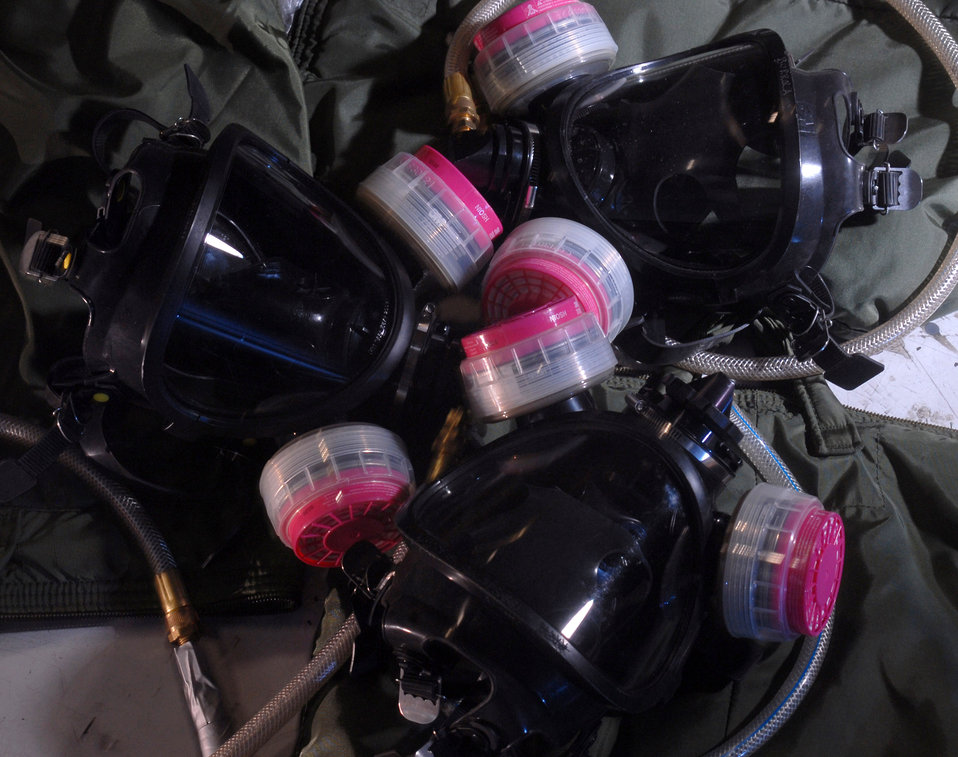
By the book

Full-face supplied air respirators are used by fuel cell technicians from the 452nd Maintenance Squadron to inspect aircraft fuel tanks Jan. 9 at March Air Reserve Base, Calif.